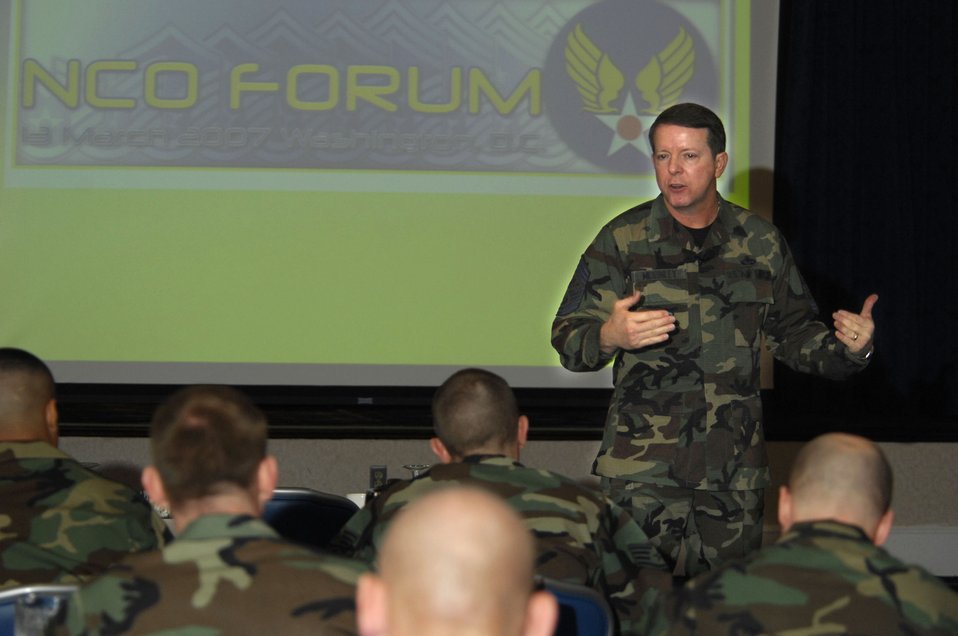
Airmen learn new perspectives in leadership

Chief Master Sergeant of the Air Force Rodney J. McKinley, speaks to a group of NCO's about policy changes, recapitalization, the